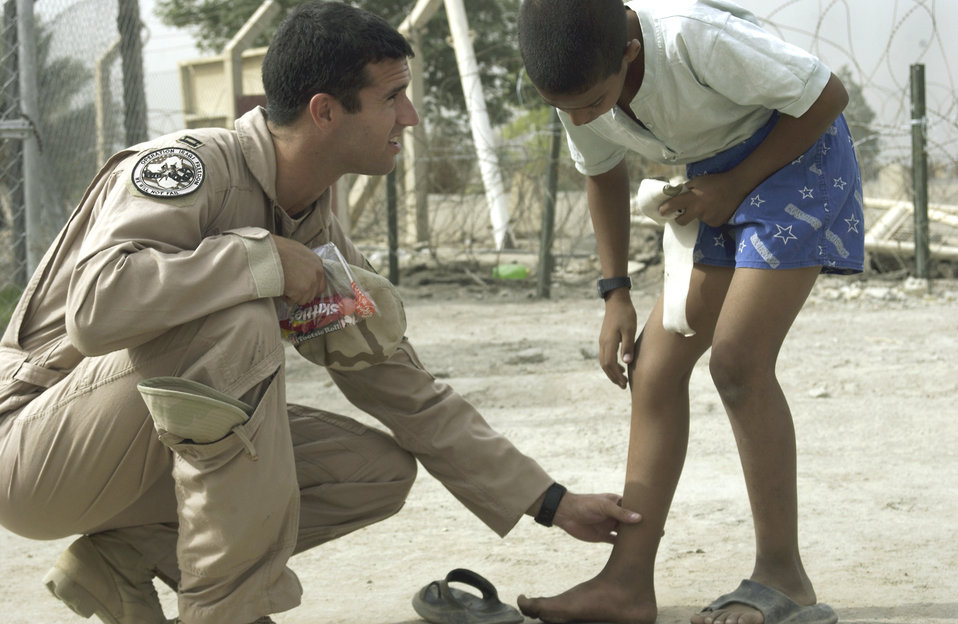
Medical visit

FRENCH VILLAGE, Iraq -- Capt. (Dr.) Jeff Skinner examines a patient on the street outside the new clinic here. Skinner and others plan to care for local Iraqis in the not-for-profit clinic three to four days per week. He is deployed from the 1st Fighter Wing at Langley Air Force Base, Va.